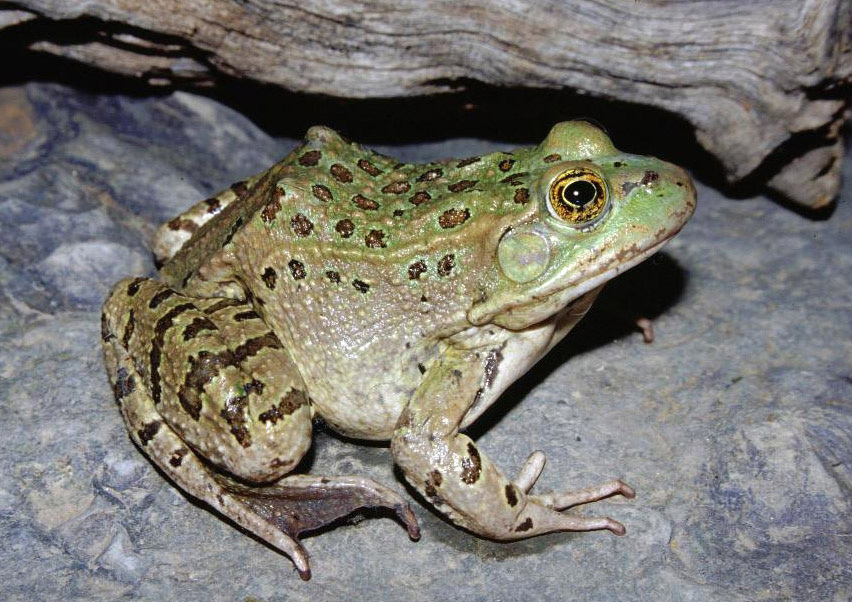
Chiricahua leopard frog

Scientific name: Rana chiricahuensis
Status: Threatened
Credit: Jim Rorabaugh/USFWS
(Coconino National Forest, Arizona)